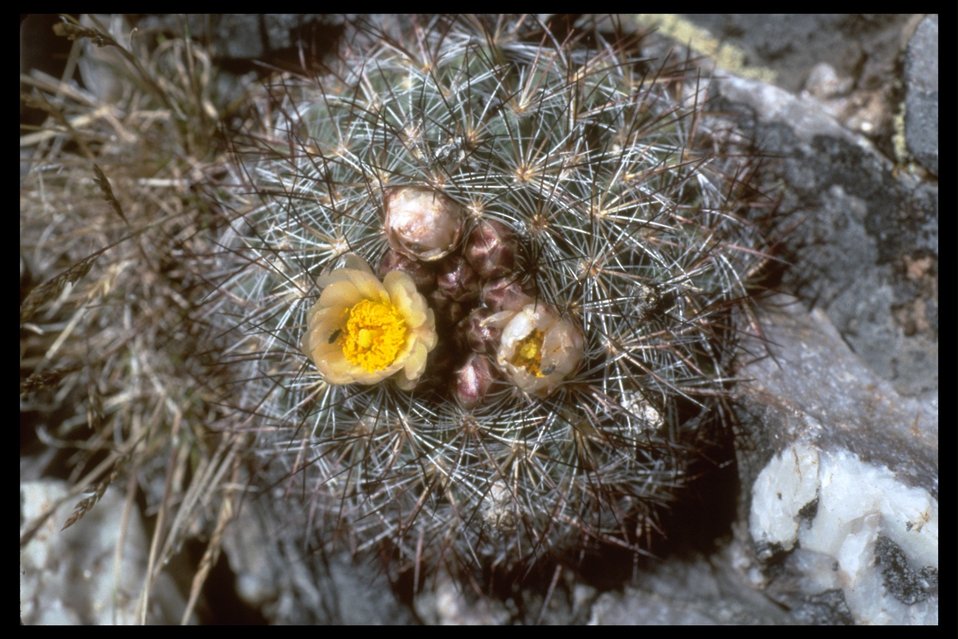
A blooming cactus found in the Pueblo Mountain WSA. (WSA 2-81)